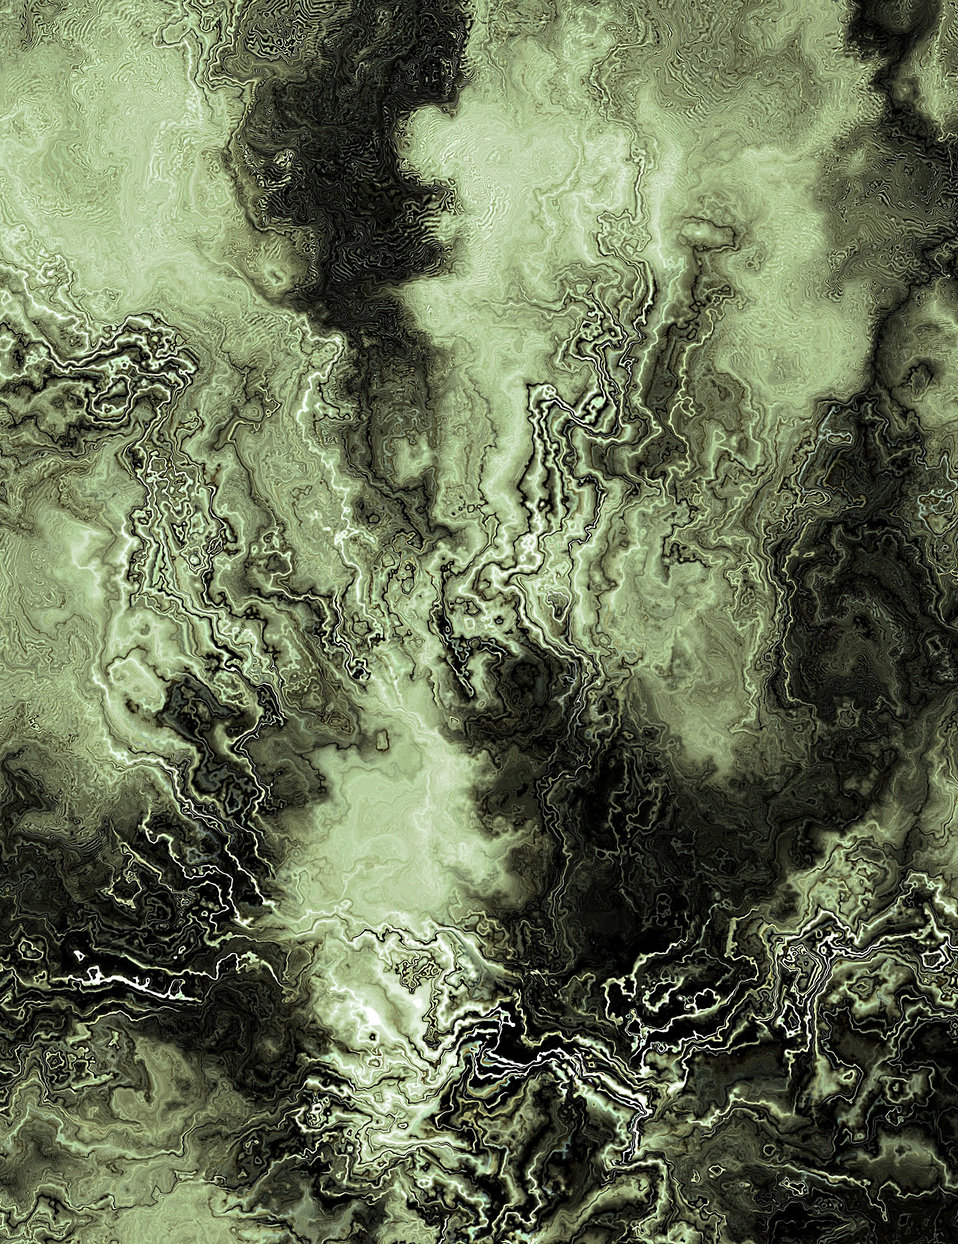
Gray green background structure

Background structure of gray green.